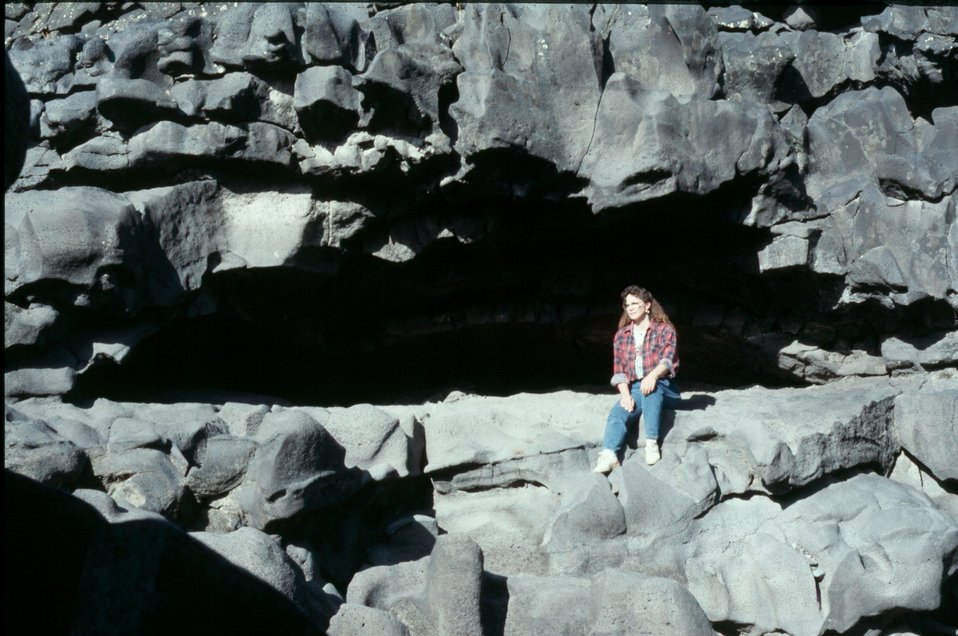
Lava Blister Shoshone Field Office USRD Upper Snake River District